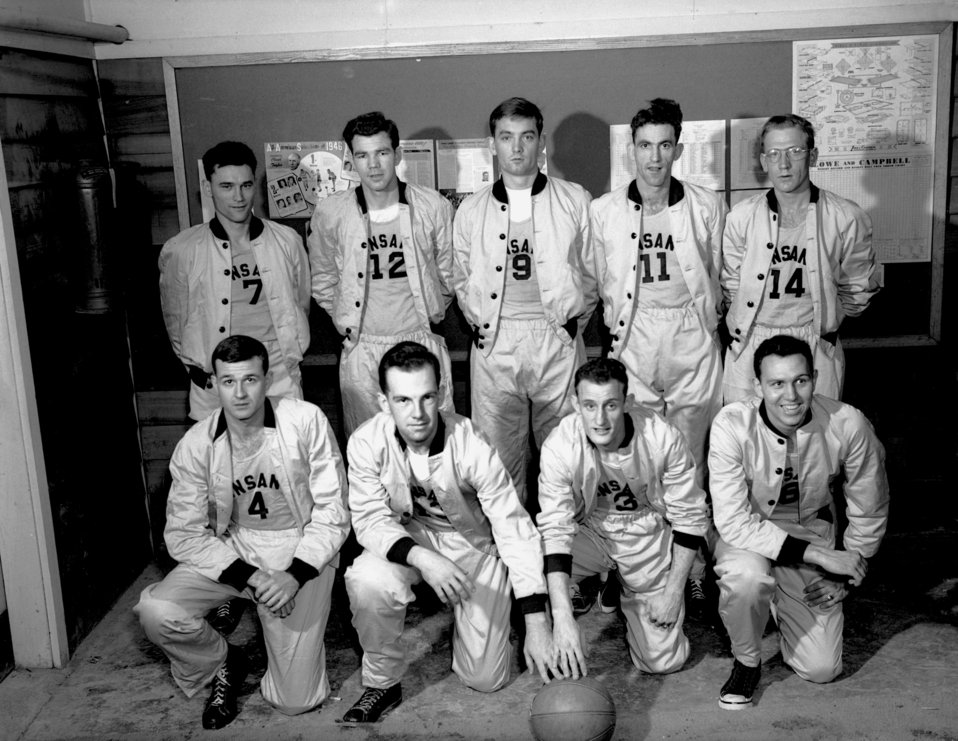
Basketball Team Monsanto Oak Ridge

3223-1a DOE photo by Ed Westcott 1-6-1947 Oak Ridge Tennessee